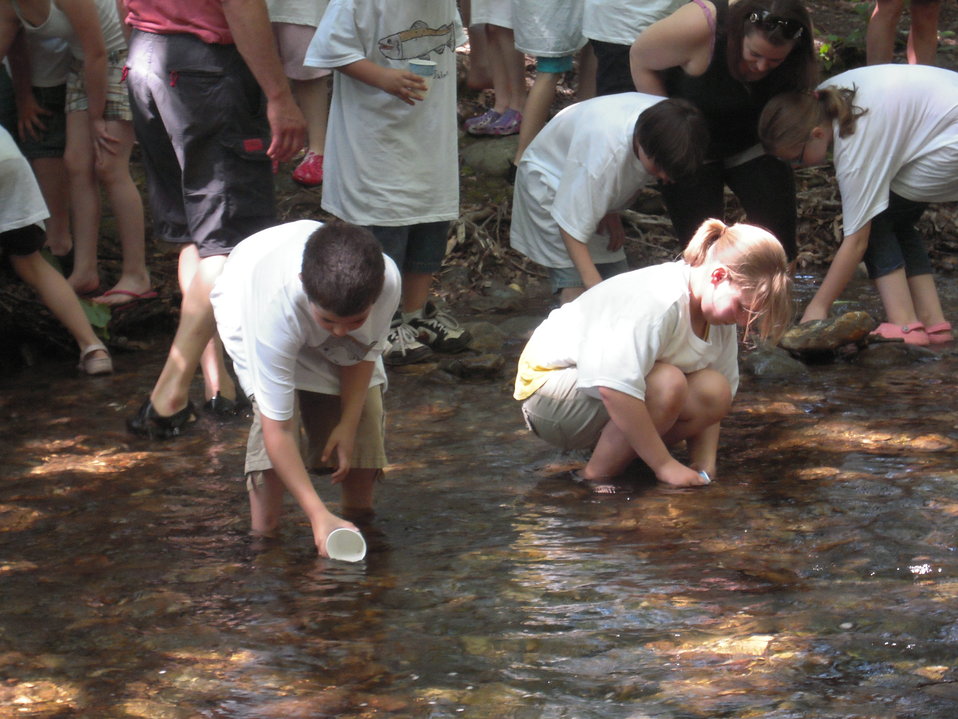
Releasing salmon fry